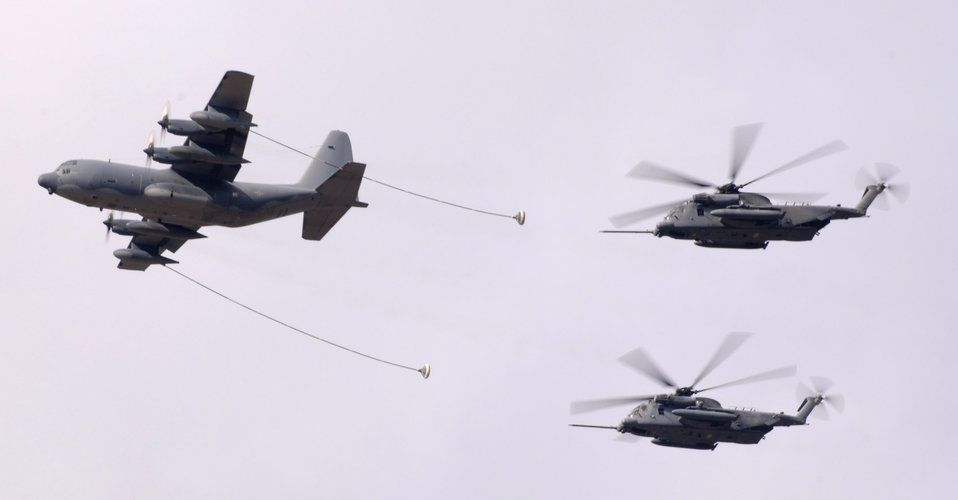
Gas and go

A MC-130W refuels two MH-53J Pave Lows during an air demonstration ceremony Nov 16 at Hurlburt Field, Fla. The ceremonial is part of the Hurlburt Field's Heritage to Horizon.